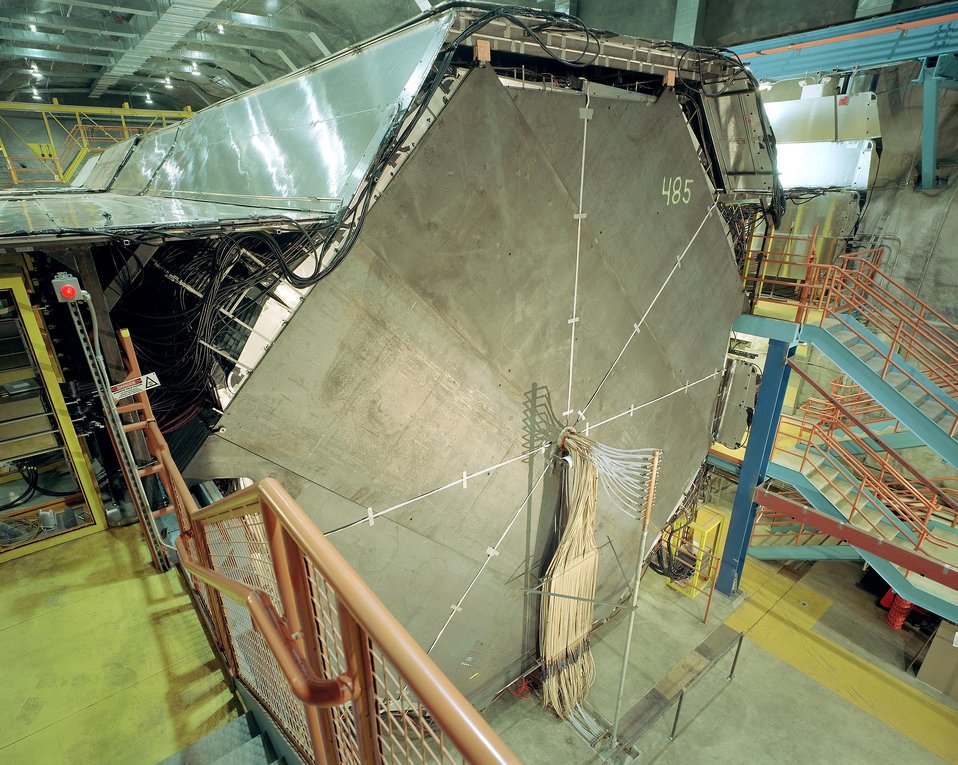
THE MAIN INJECTOR NEUTRINO OSCILLATION SEARCH DETECTOR.

THE MINOS DETECTOR, BUILT IN COLLABROATION WITH DOE AND INTERNATIONAL SCIENTISTS, WEIGHING 6000 TONS, IS INSTALLED IN A CAVERN 1/2 MILE UNDERGROUND IN THE SOUDAN UNDERGROUND LAB IN MINNESOTA. THE DETECTOR IS RECORDING COSMIC RAY SHOWERS PENETRATING THE EARTH. THE NEXT PHASE WILL INVOLVE CATCHING NEUTRINOS CREATED AT FERMILAB'S MAIN INJECTOR ACCELERATOR. THE NEUTRINOS WILL TRAVEL 450 MILES THROUGH THE EARTH, WITHOUT A TUNNEL NEEDED. PHYSICISTS WILL USE THE MINOS DETECTOR TO EXPLORE THE PHENOMENON OF NEUTRON MASS.